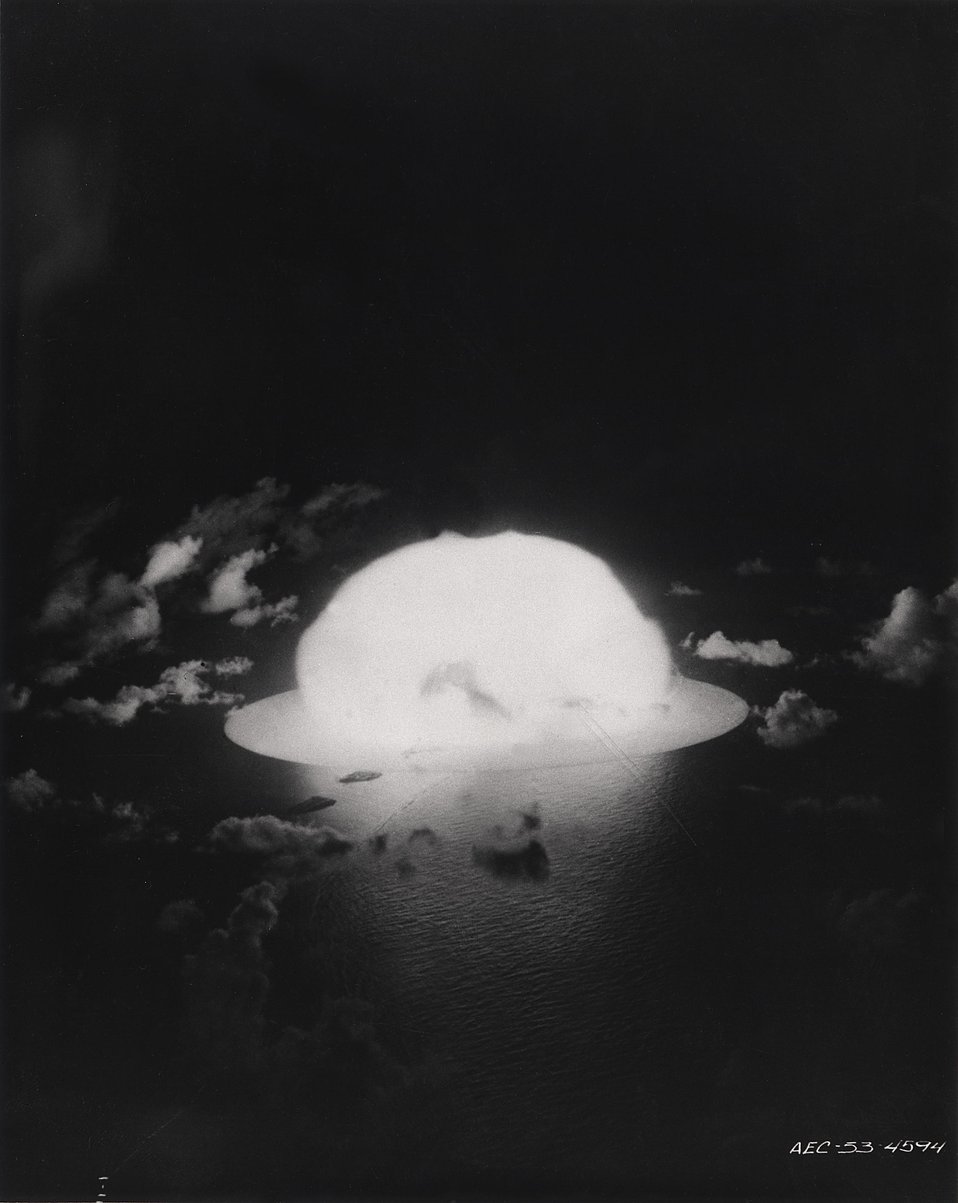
An early phase of a nuclear detonation at Eniwetok during the 1951 tests.